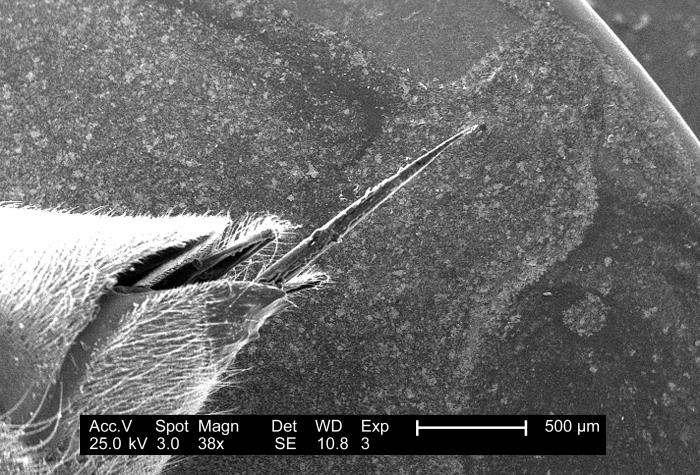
From a lateral perspective, and under a low magnification of 38x, this scanning electron micrograph (SEM) depicted some of the ultrastructural morphologic details of the stinger apparatus of an unidentified hymenopteran insect found deceased in the Decatur, Georgia suburbs. The Order of Hymenoptera includes bees, wasps, ants, and sawflies. Judging from the smooth nature of this stinger shaft, this was probably something other than a honeybee, whose stinger shaft would have displayed more defined, broader barbs at the distal tip. The smoother nature of the shaft, would have allowed the stinger to have been easily extracted without it becoming inextricably embedded when it was penetrating a victim's skin, as is the case with the Western honeybee, Apis mellifera.